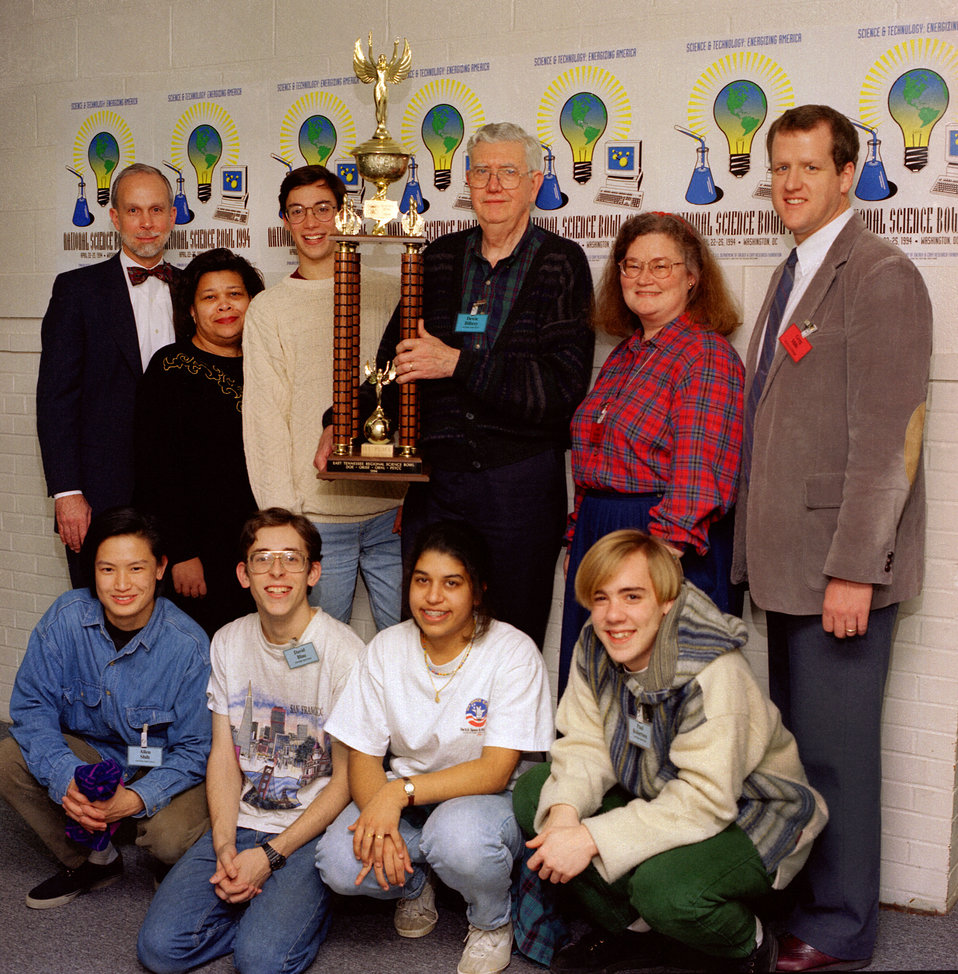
National Science Bowl Oak Ridge High School

94-115a DOE photo Lynn Freeny 1994 Pellissippi State Maryville Tennessee